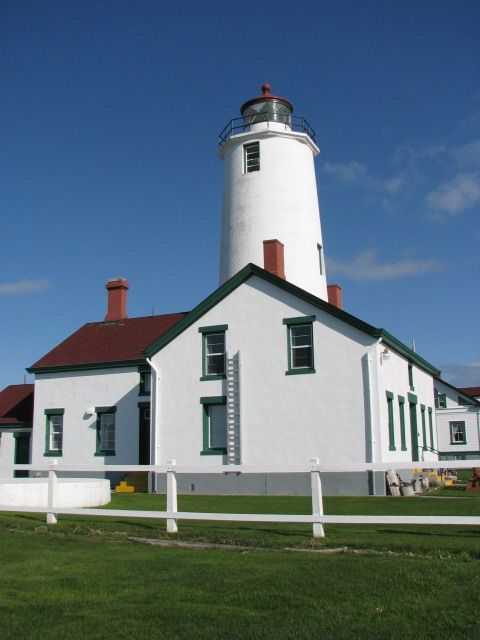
New Dungeness Light

Dungeness National Wildlife Refuge, Washington.